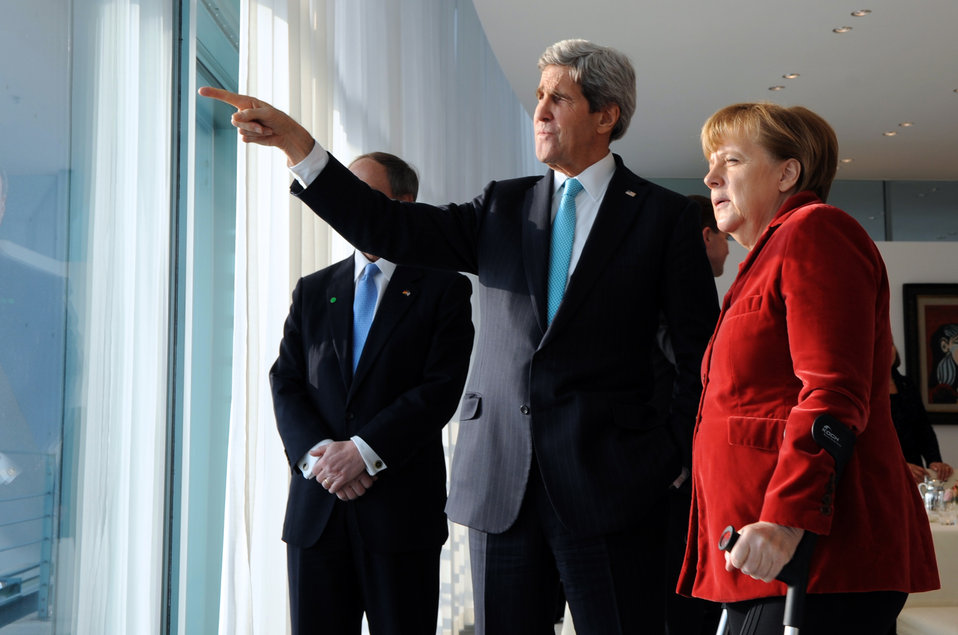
German Chancellor Merkel, Secretary Kerry Look Out at Berlin Landmarks

German Chancellor Angela Merkel, U.S. Secretary of State John Kerry, and U.S. Ambassador to Germany John Emerson admire the view of Berlin, Germany, from Merkel's office in the Chancellery on January 31, 2014.